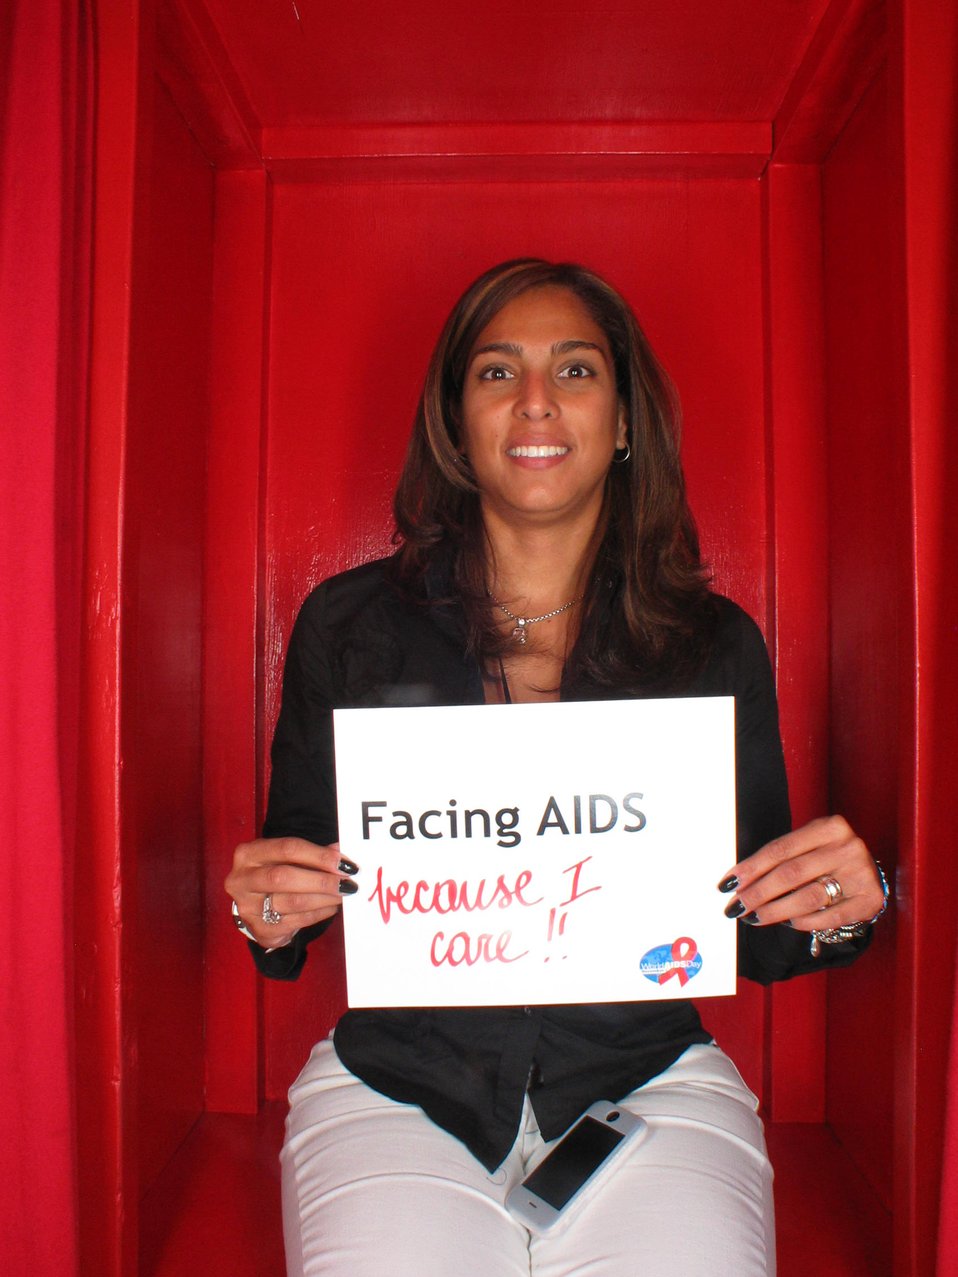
Facing AIDS because I care.